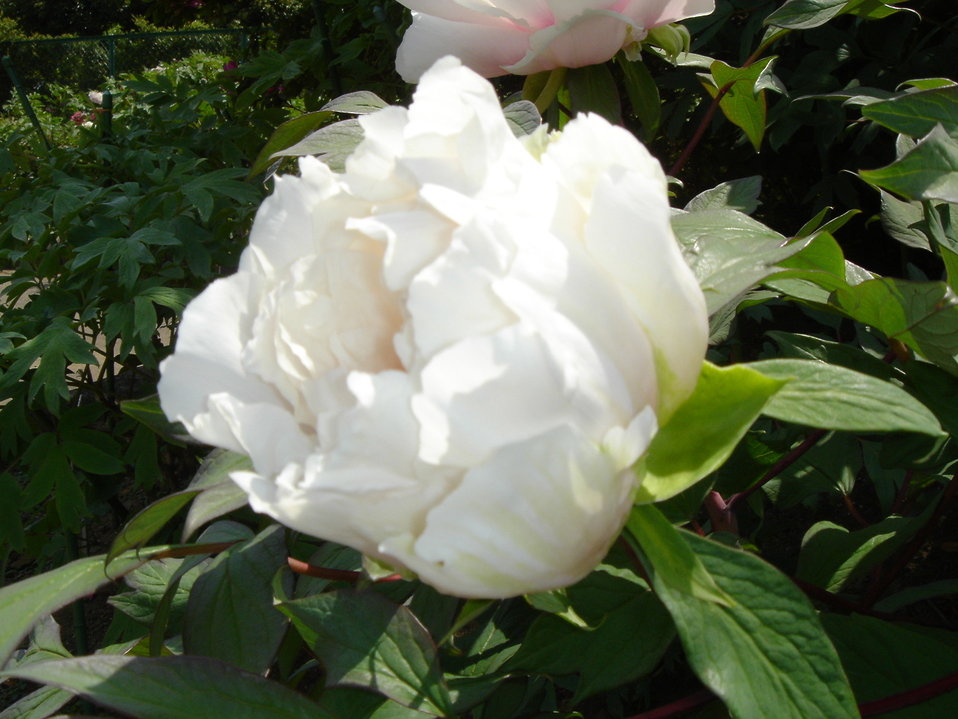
Paeonia suffruticosa3